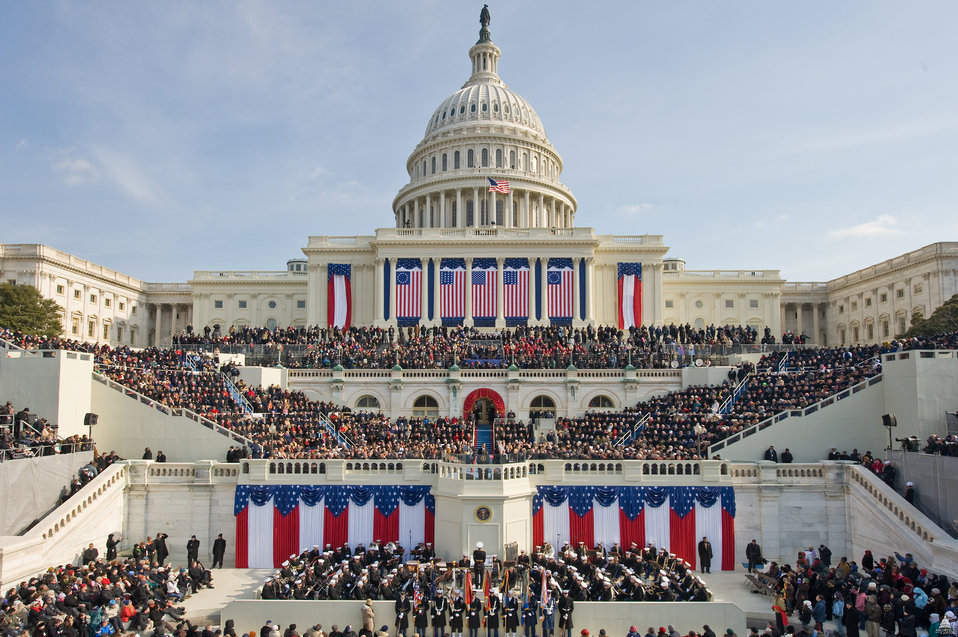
Presidential Inauguration

The Inauguration of President Barack H. Obama, 44th president of the United States, on the West Front of the Capitol. January 20, 2009